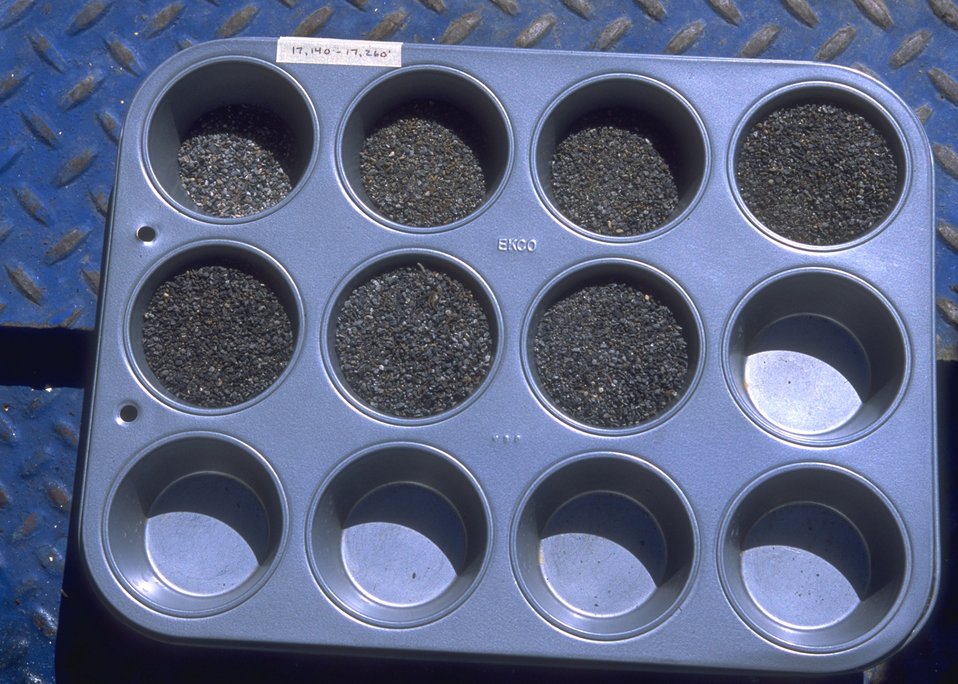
Samples of rock taken at different depths at the Burlington Northern deep well rig site, Casper Field Office.